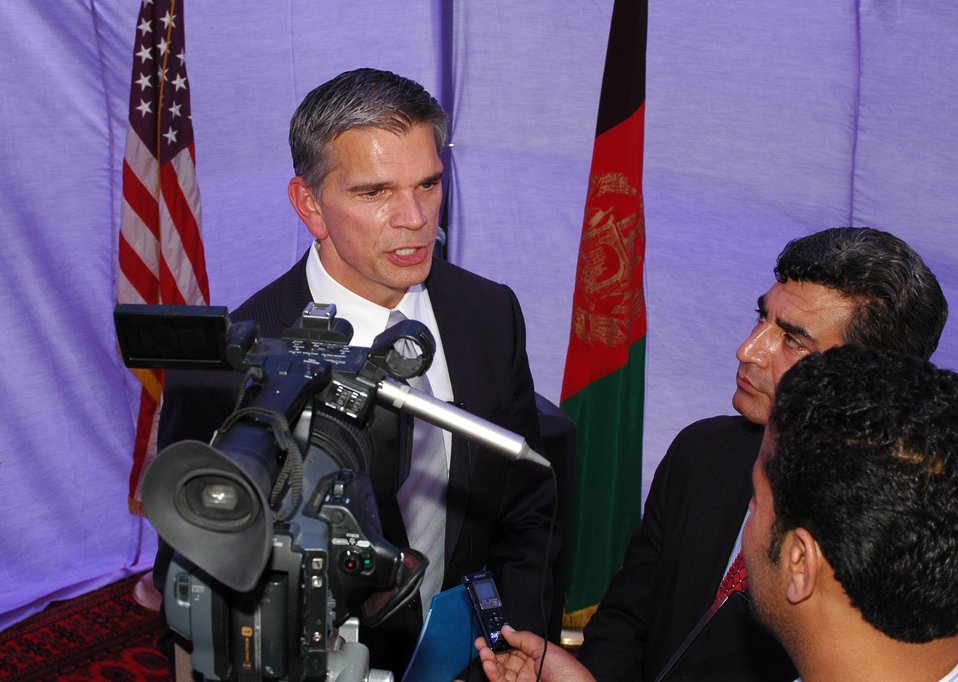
105 MW Tarakhil Power Plant Handover